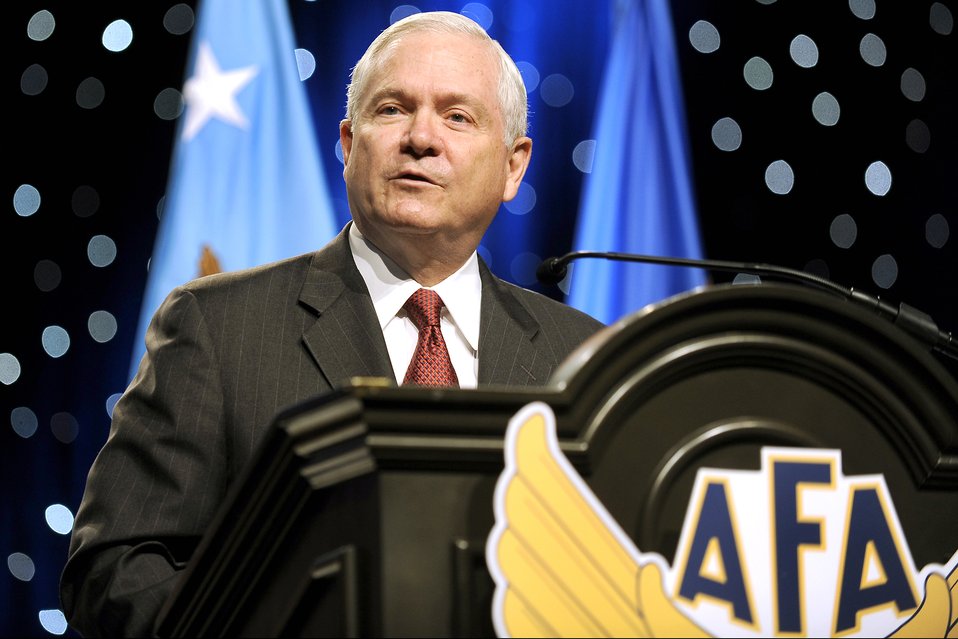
Air Force has solid future capabilities, Secretary Gates says

Secretary of Defense Robert M. Gates addresses the audience at the Air Force Association's 2009 Air and Space Conference and Technology Exposition in Washington, D.C., Sept. 16, 2009. The three-day conference features more than 130 exhibitors and more than three dozen speakers and panelists discussing topics of key interest in today's Air Force and aerospace development.